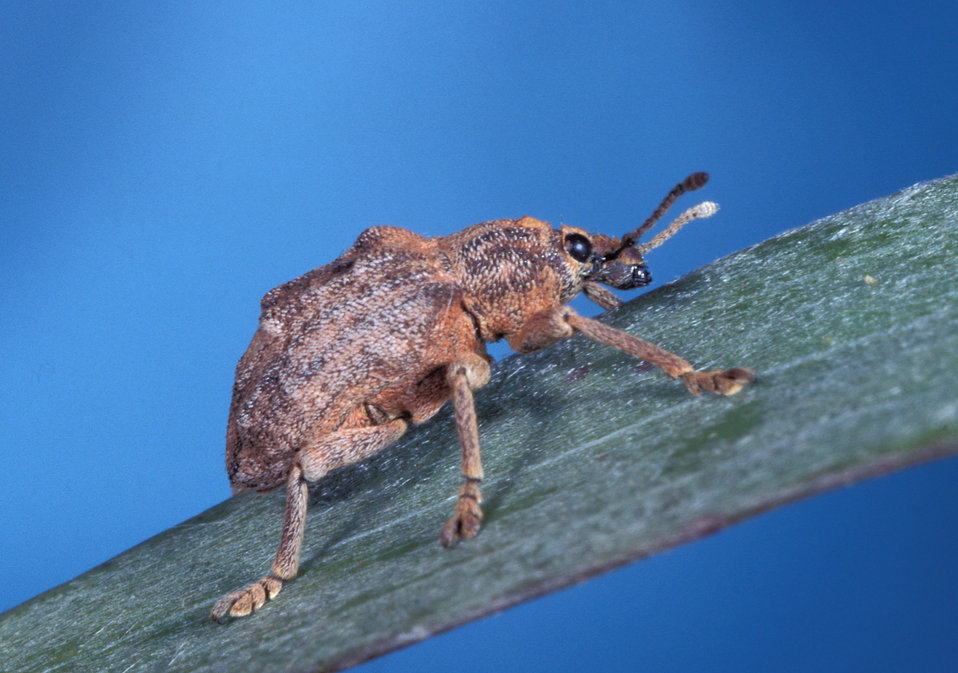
A leaf weevil (Oxyops vitiosa) is thriving on invasive melaleuca in southern Florida.